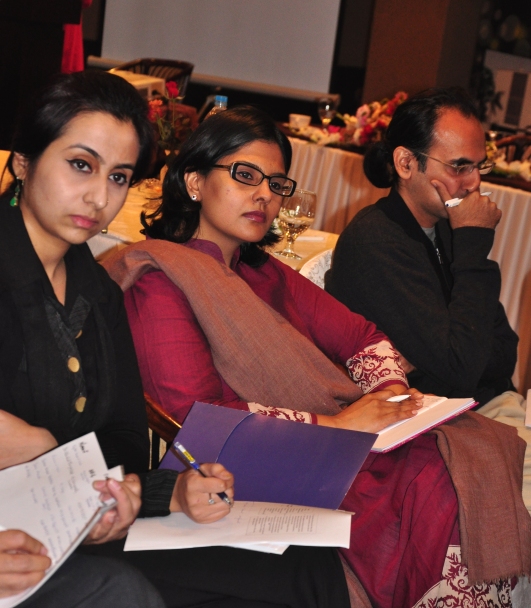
Education Workshop 247